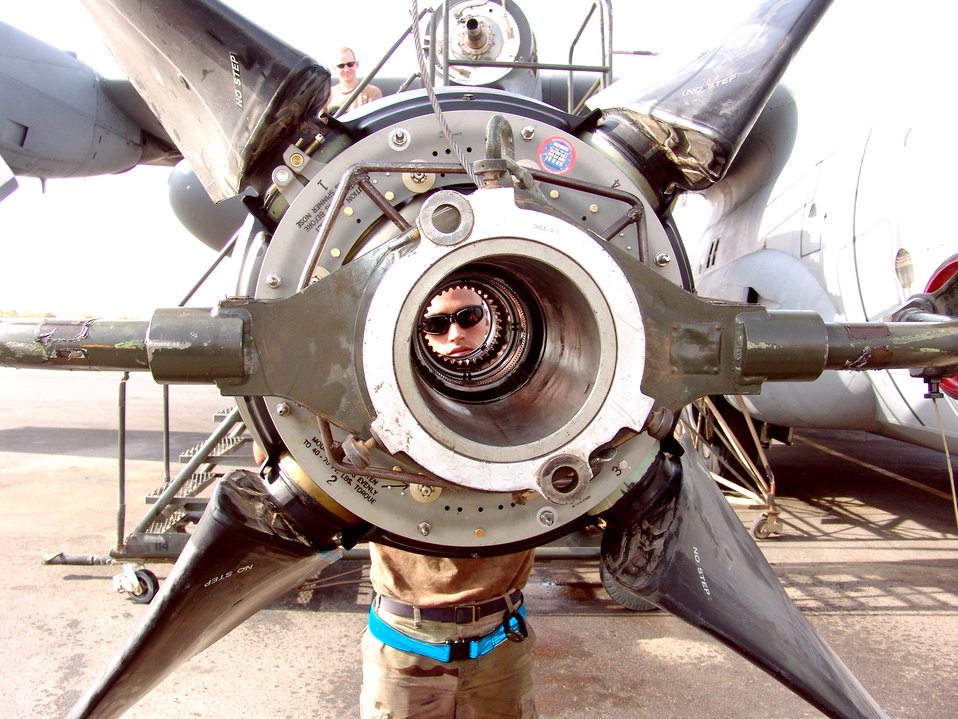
A 'propelling' mission

SOUTHWEST ASIA -- Airman 1st Class Nicholas Ortiz inspects a new propeller before its installation on a C-130 Hercules engine. Airman Ortiz is a crew chief with the 386th Expeditionary Airlift Maintenance Squadron at a forward-deployed location and is from Pope Air Force Base, N.C.